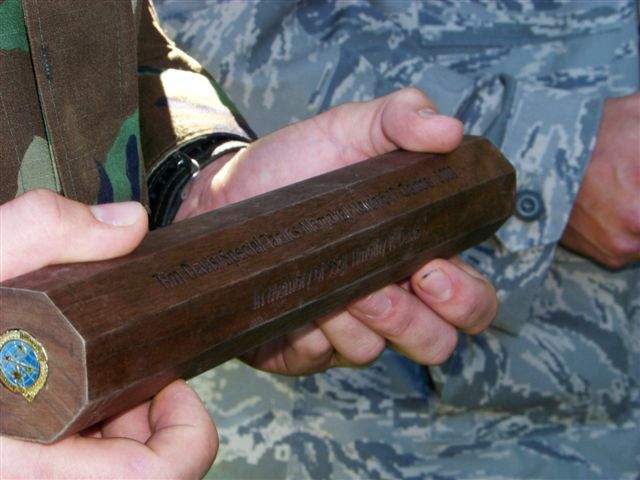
Brothers in arms march for cause

A baton engraved with the name of Staff Sgt. Timothy Davis was presented to the Special Tactics Training Squadron commander during a ceremony Oct. 16, 2009, at Hurlburt Field, Fla. Sergeant Davis, a fallen combat controller who was assigned to the 23rd Special Tactics Squadron, and 12 other special operations forces members were honored in an 824-mile rucksack march from Lackland Air Force Base, Texas, to Hurlburt Field where the baton will be permanently displayed.